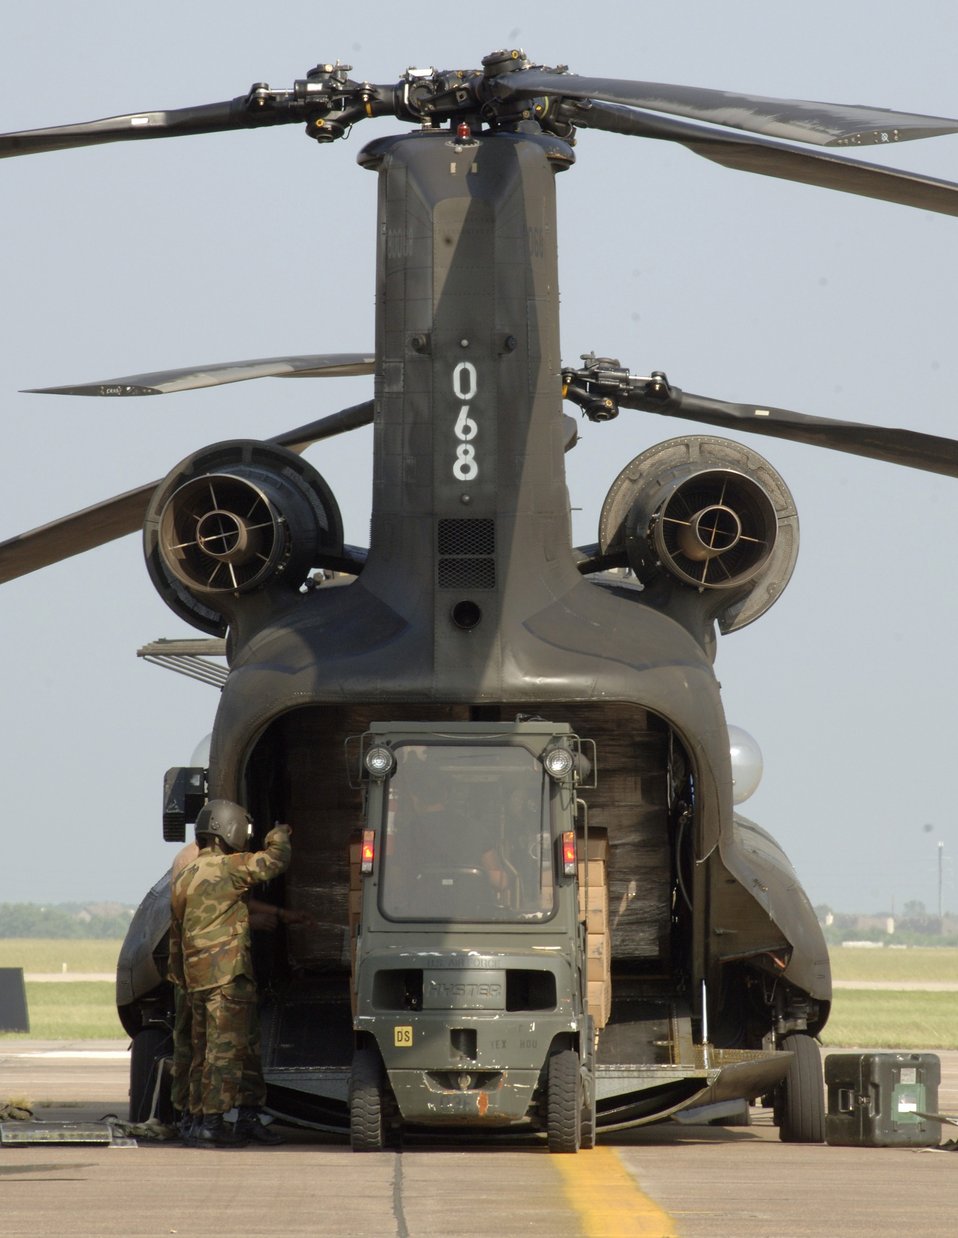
Meals Ready to Eat

ELLINGTON FIELD, Texas -- An Army CH-47 Chinook helicopter is loaded with food and water here Sept. 25 for delivery to Hawthorn, Texas. Aircraft activity increased here where relief efforts are underway to support areas affected by Hurricane Rita.